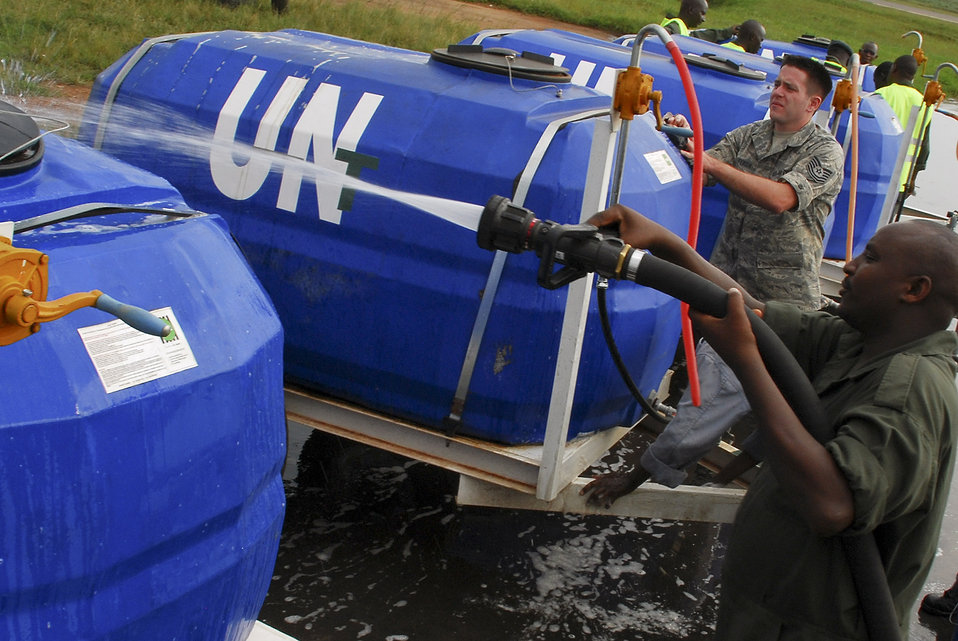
Airmen begin Darfur airlift operations

Technical Sgt. Bradley Ferda joins volunteers from the Kigali fire department and Rwandan defense forces soldiers to wash water tanks and other military vehicles in preparation for their deployment to the Darfur region of Sudan as part of the United Nations-Africa Union Peacekeeping mission there Jan. 13 at Kigali, Rwanda. The vehicles will be transported via Air Force C-17 Globemaster IIIs. Sergeant Freda is assigned to 17th Air Force and U.S. Africa Command.